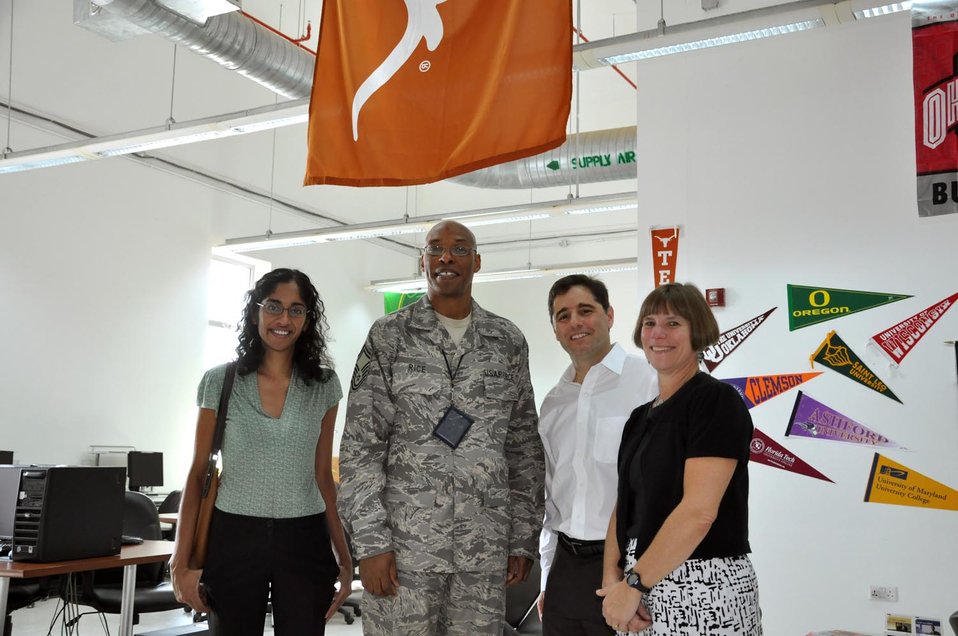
Chairman Genachowski visits with U.S. soldiers